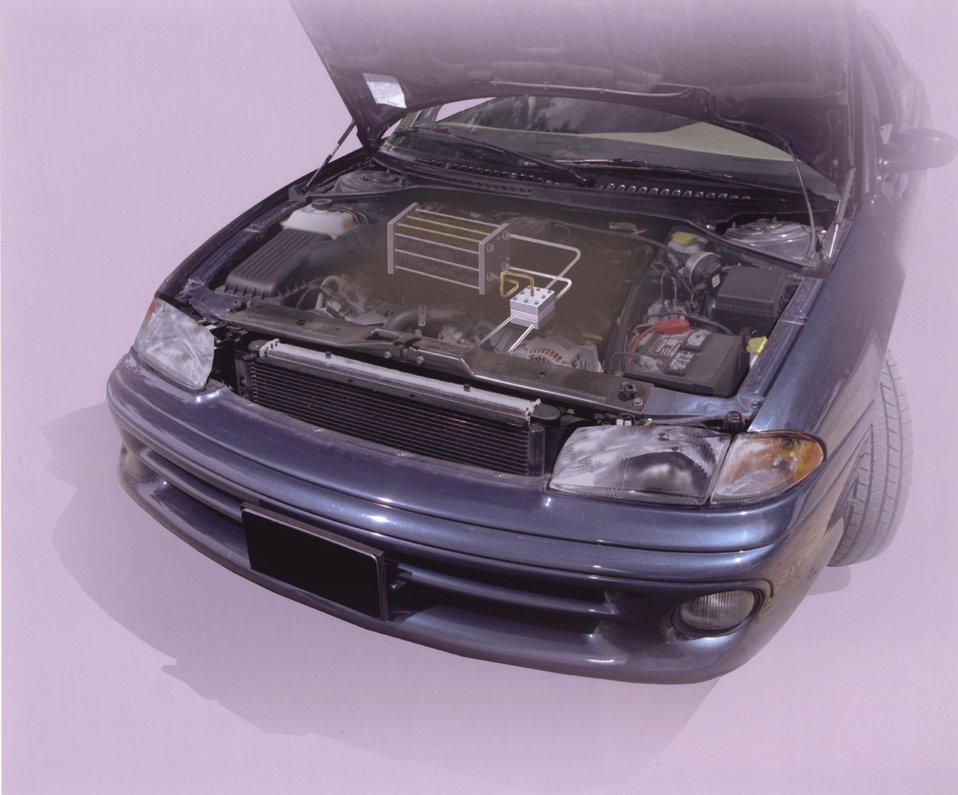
THE VEHICLE OF THE FUTURE MAY HAVE A FUEL CELL USING A MICROCHANNEL FUEL PROCESSOR UNDER THE HOOD.

PACIFIC NORTHWEST NATIONAL LABORATORY, WITH PRIVATE INDUSTRIES IS DEVELOPING A LIGHTWEIGHT, COMPACT FUEL PROCESSOR TO CONVERT TRADITIONAL LIQUID HYDROCARBON FUELS TO HYDROGEN IN ORDER TO FUEL PEM (PROTON EXCHANGE MEMBRANE) FUEL CELLS FOR ELECTRIC VEHICLES.